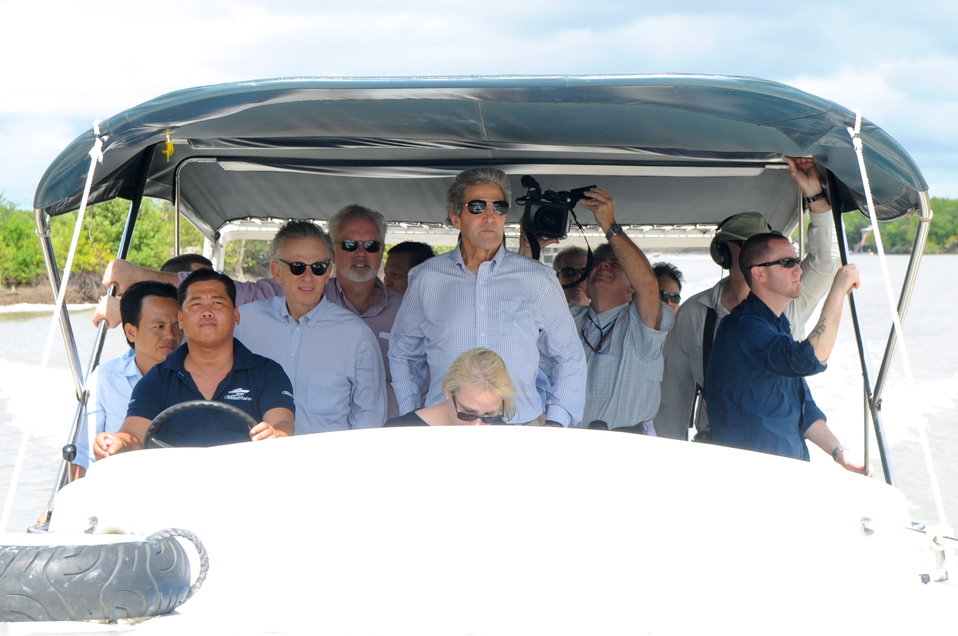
Secretary Kerry Tours Mekong River Delta

U.S. Secretary of State John Kerry, a Navy veteran of the Vietnam War, returns to the Mekong Delta in Vietnam for a tour and climate change speech on December 15, 2013.